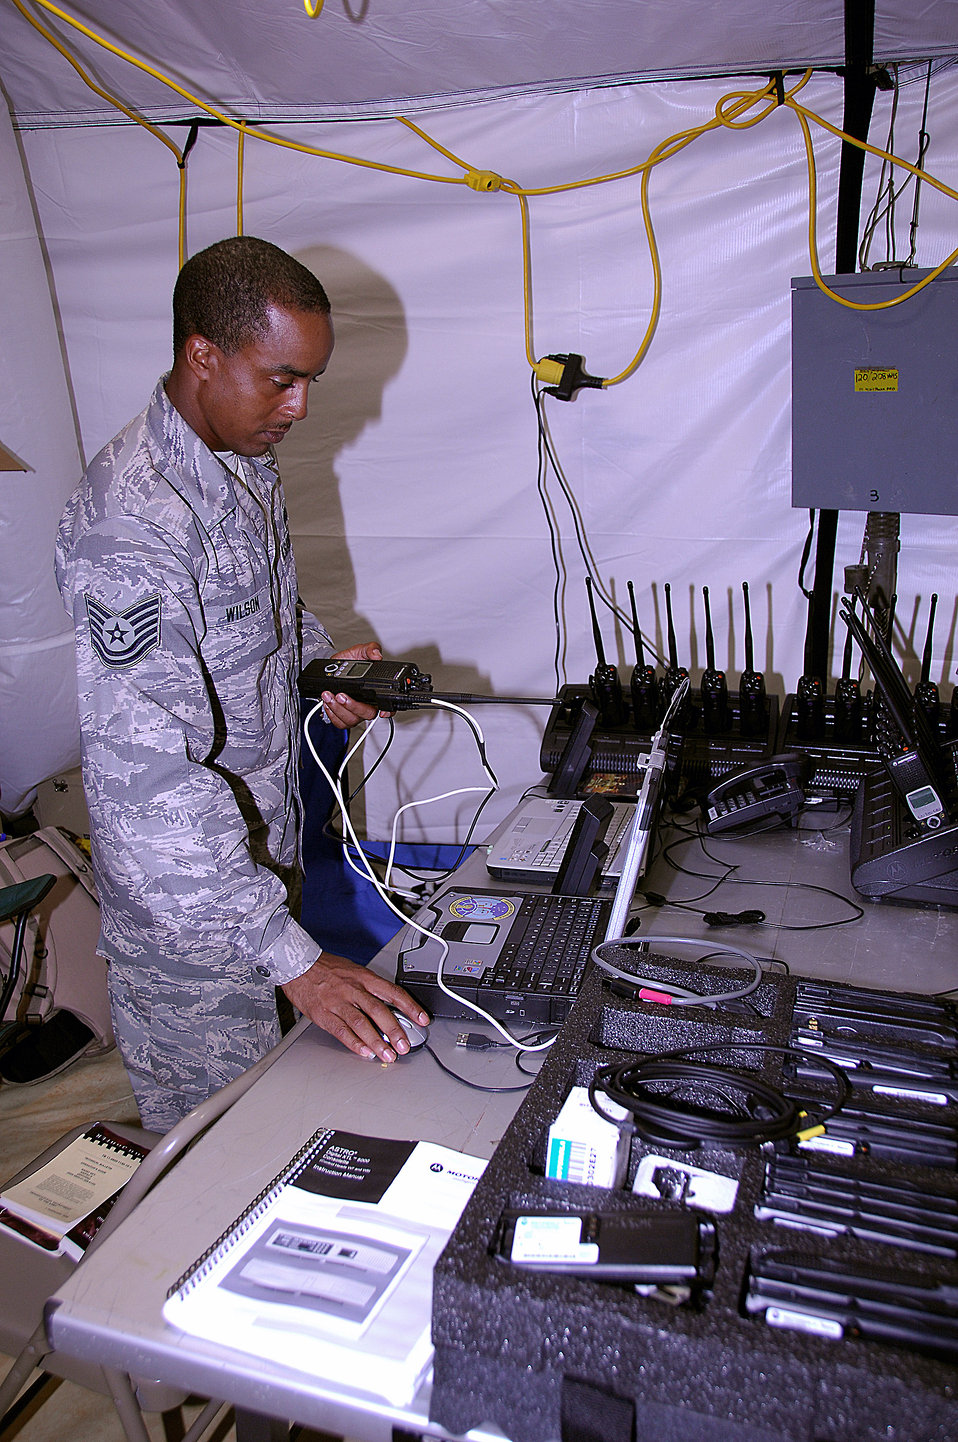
Andersen Airmen hear Dragon Thunder

Tech. Sgt. Jason Wilson demonstrates the steps taken to program land mobile radios during the squadron's Dragon Thunder field training exercise Nov. 20 at Andersen Air Force Base, Guam. Sergeant Wilson is the 644th Combat Communications Squadron radio maintenance NCO in charge.